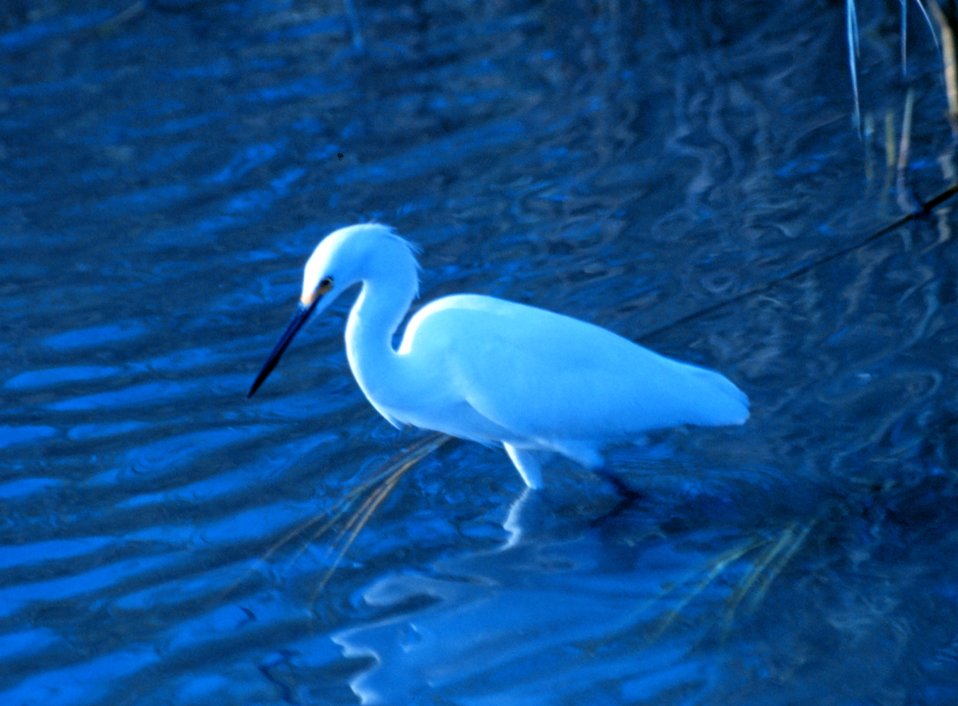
A great white egret in the tidal waters of Charleston harbor.